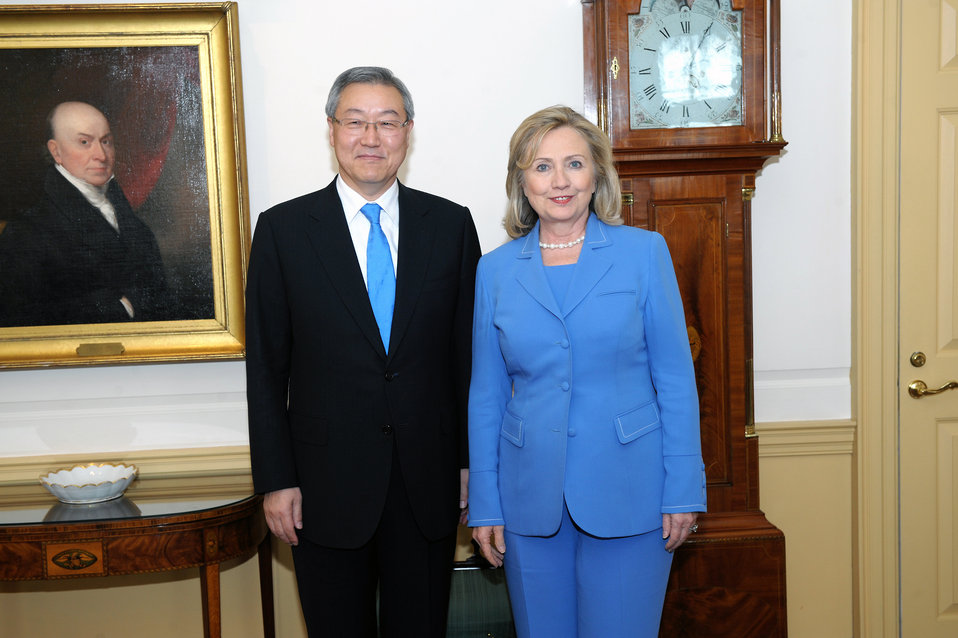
Secretary Clinton Meets With Korean Foreign Minister Kim Sung-Hwan

U.S. Secretary of State Hillary Rodham Clinton meets with Korean Foreign Minister Kim Sung-Hwan, at the U.S. Department of State in Washington, D.C., on June 24, 2011.